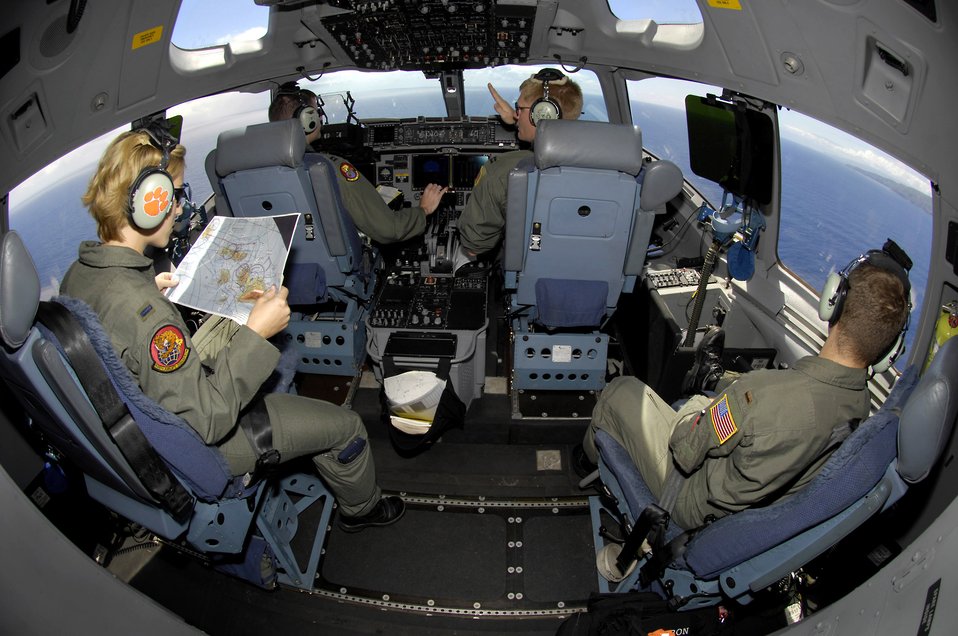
Practice makes perfect

C-17 Globemaster III pilots take turns practicing low-level flying off the coast of Hawaii May 30. The pilots are from the 535th Airlift Squadron, Hickam Air Force Base, Hawaii.